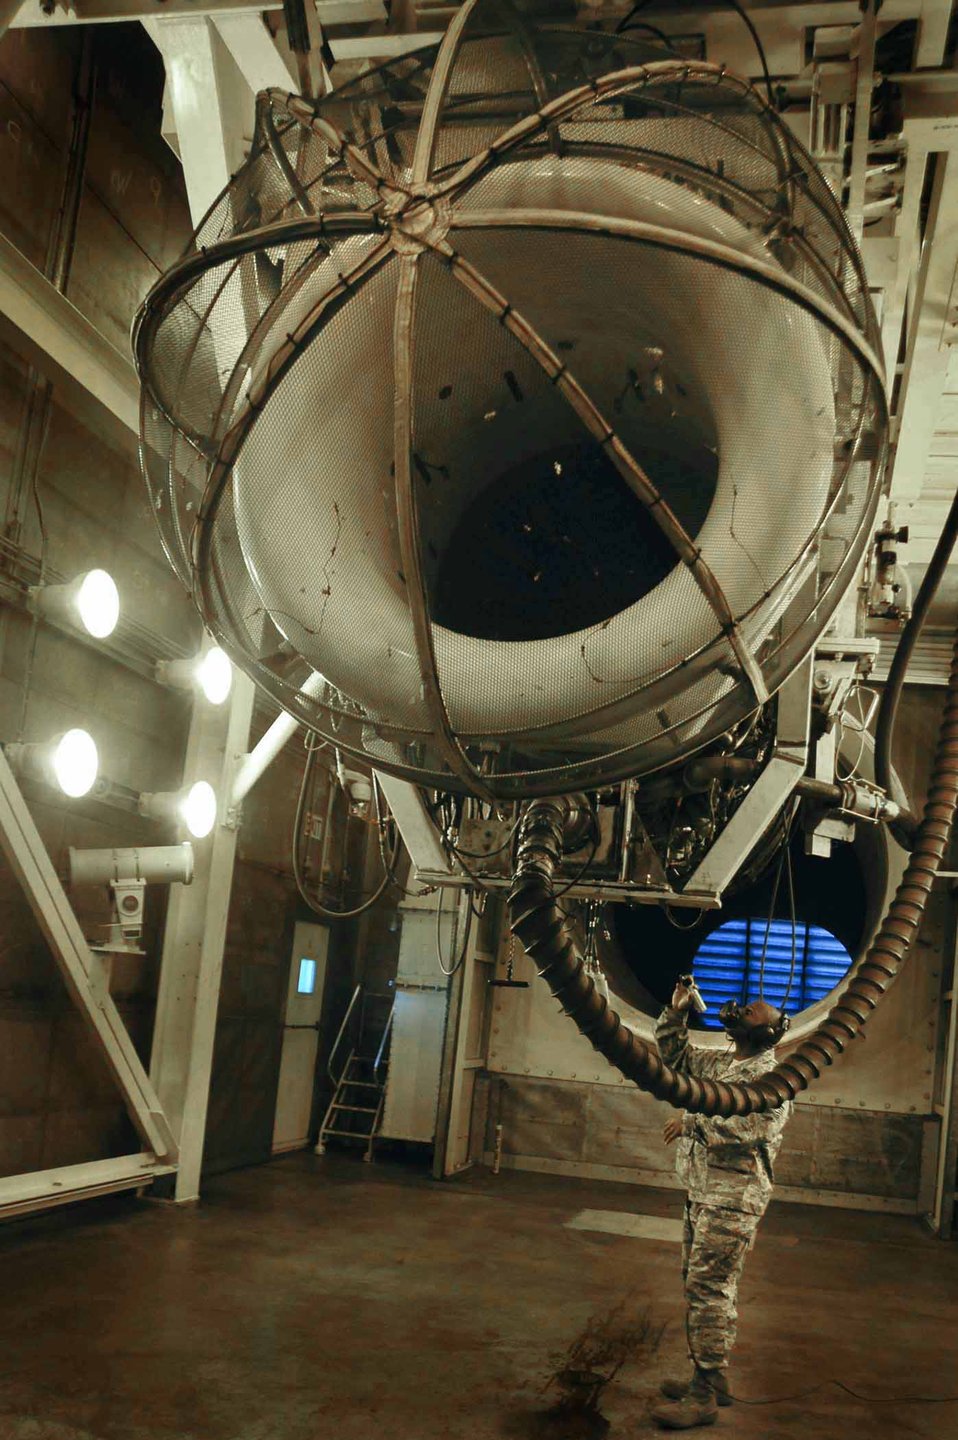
Caught in a web?

Tech. Sgt. Tywone Weston checks a B-1B Lancer F-101 turbofan engine for leaks Oct. 6, 2010, at Ellsworth Air Force Base, S.D. Sergeant Weston is an aerospace propulsion test cell assistant NCO in-charge with the 28th Maintenance Squadron.